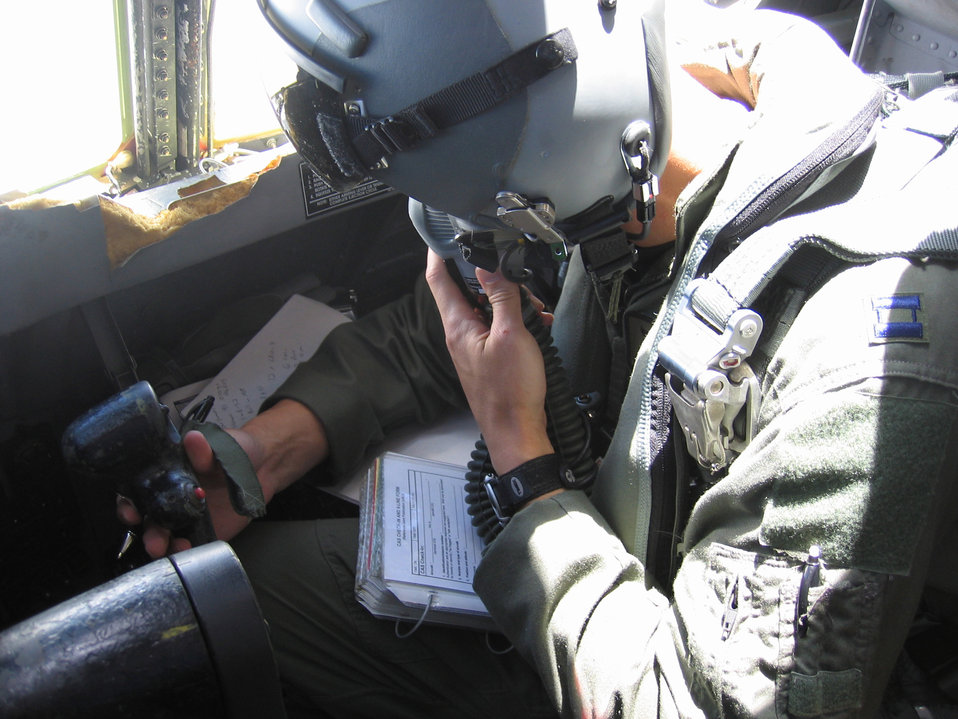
Andersen bombers participate in Koa Lightning exercise

Capt. Matthew Quy reads through a checklist on board a B-52 Stratofortress March 2 during the recent Koa Lightning exercise held in the Pacific Theatre. The trip from Guam to the exercise area and back for the B-52s often exceeded 18 hours of continuous flight and required two air refuelings for the 6,880-nautical mile journey. a co-pilot with the 96th Expeditionary Bomb Squadron at Andersen Air Force Base, Guam.